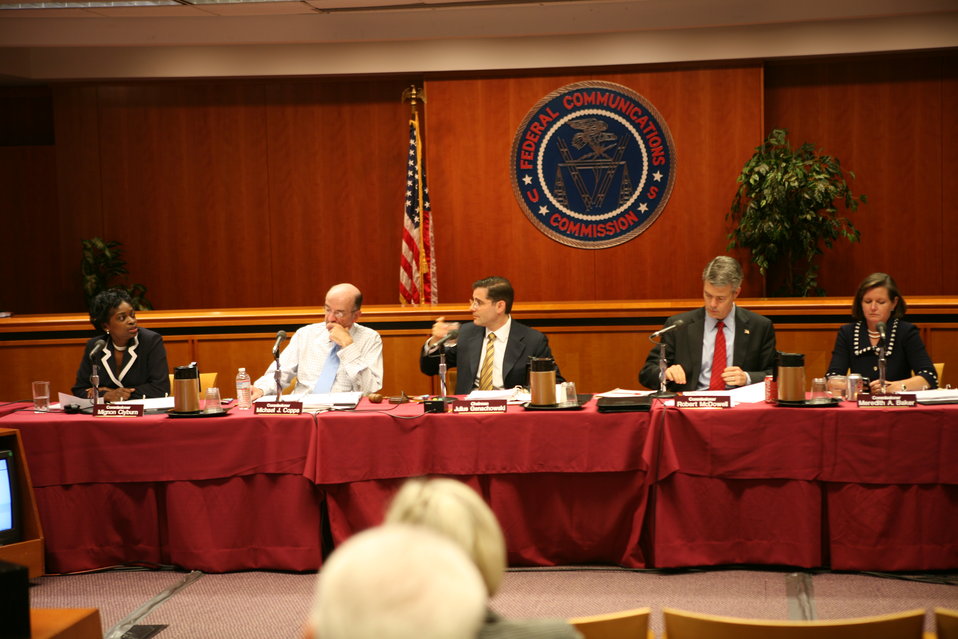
Midterm Review10

Broadband Midterm Review, 9-29-09